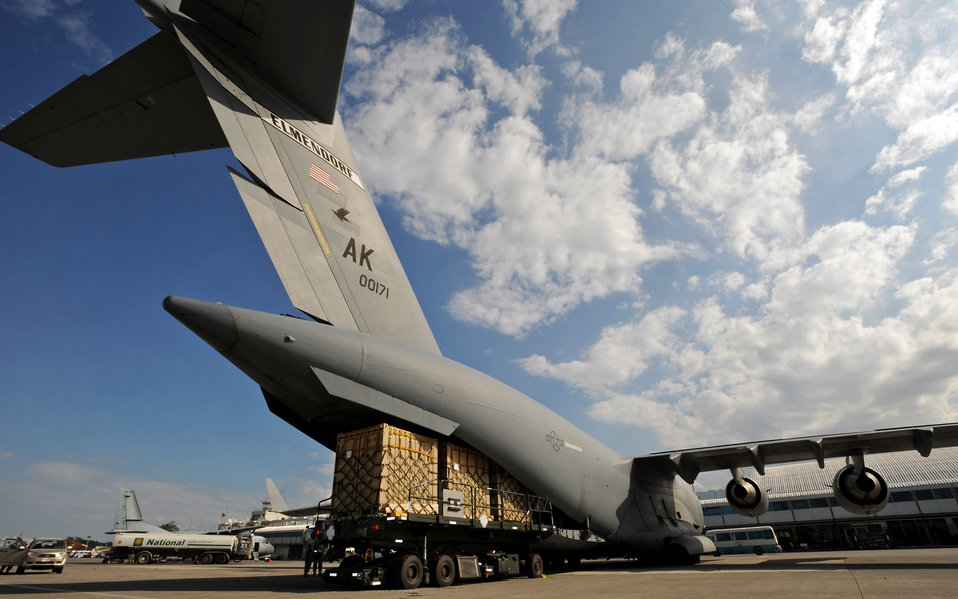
Elmendorf Airmen deliver relief supplies to Haiti

Cargo pallets are removed from a C-17 Globemaster III Jan. 31, 2010, at Port-Au-Prince, Haiti. The C-17 delivered Soldiers, a truck with water tank, and pallets of gear to be used in the Haiti relief effort.